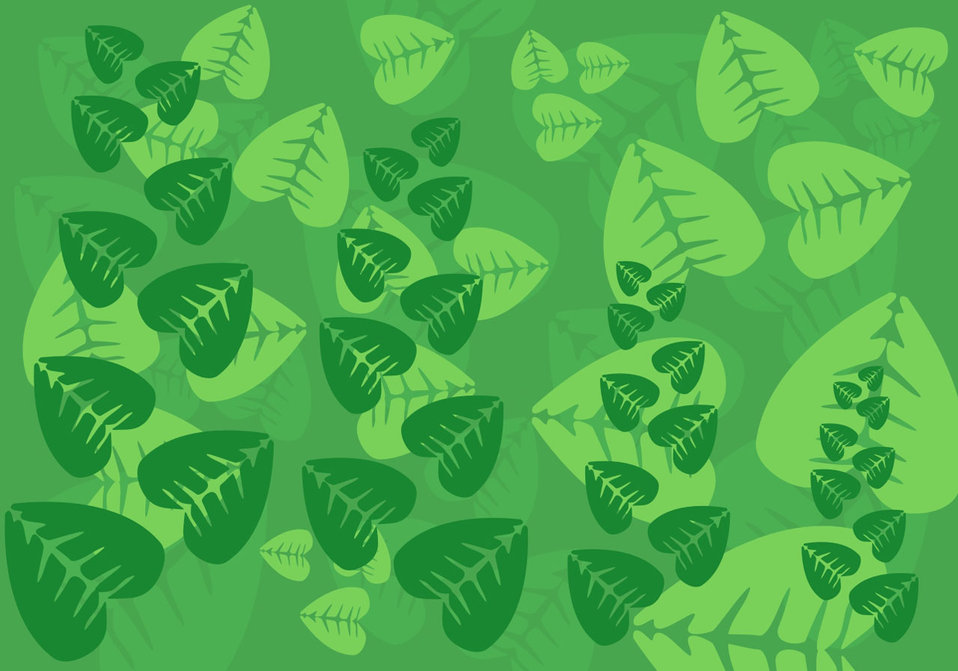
Leafy chaos

Leafy background in shades of green.